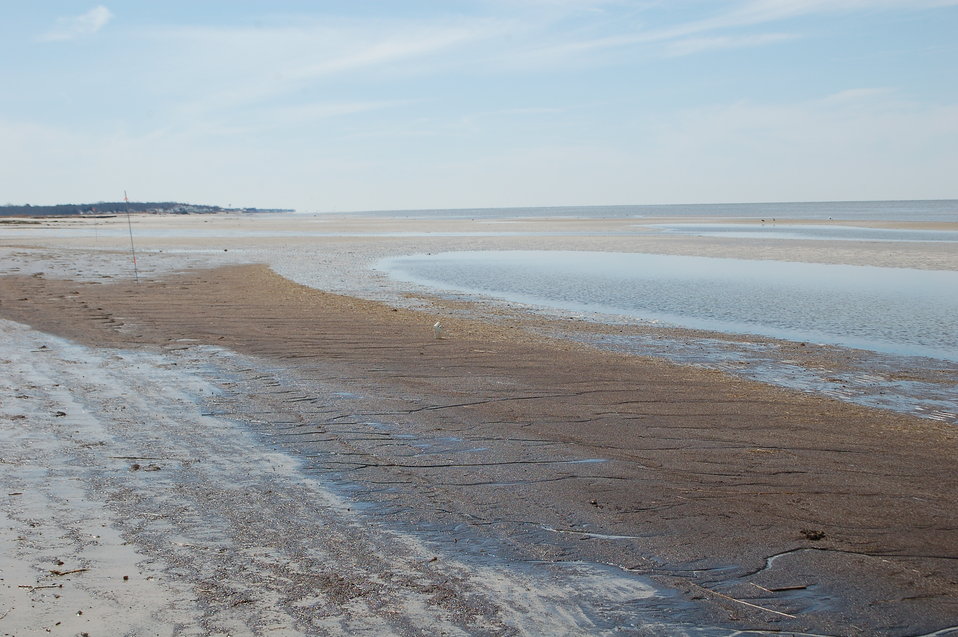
Kimbles Beach-5

Beaches were badly eroded on New Jersey's Delaware Bay after Hurricane Sandy.